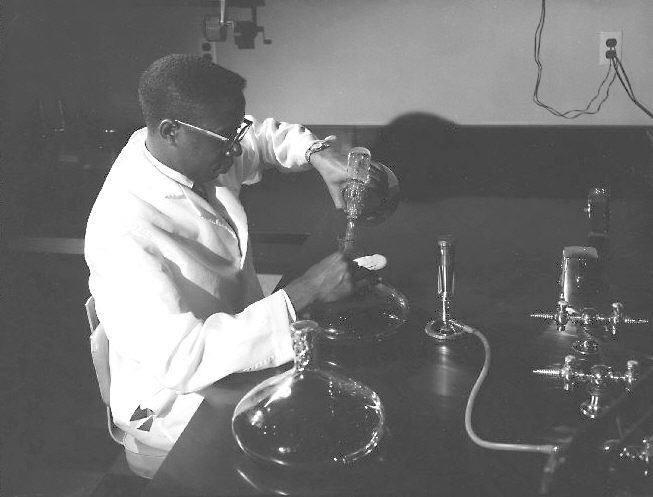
CDC Laboratorian